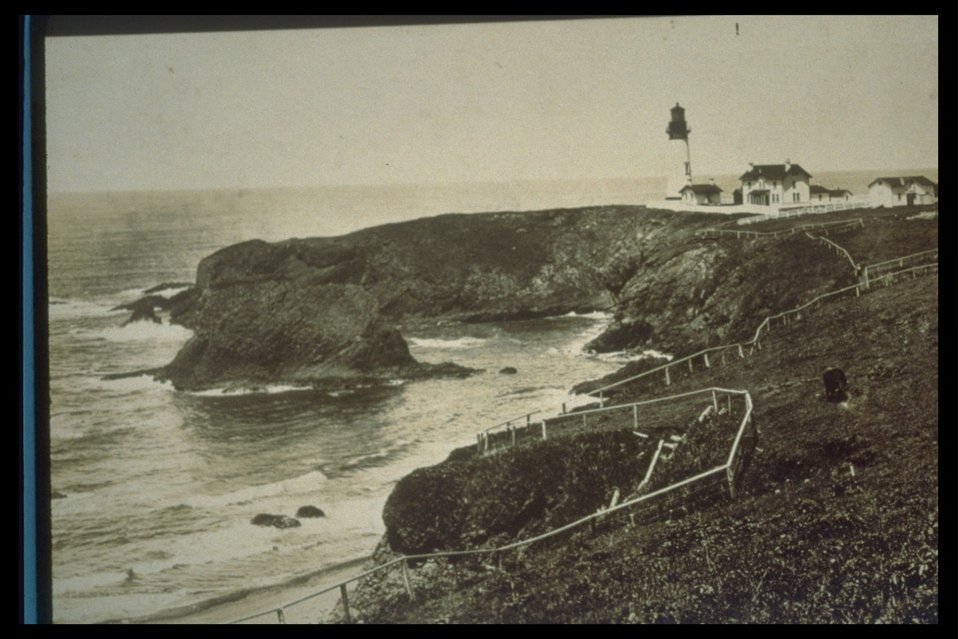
Early Yaquina Head Lighthouse with Lion's Head Rock.